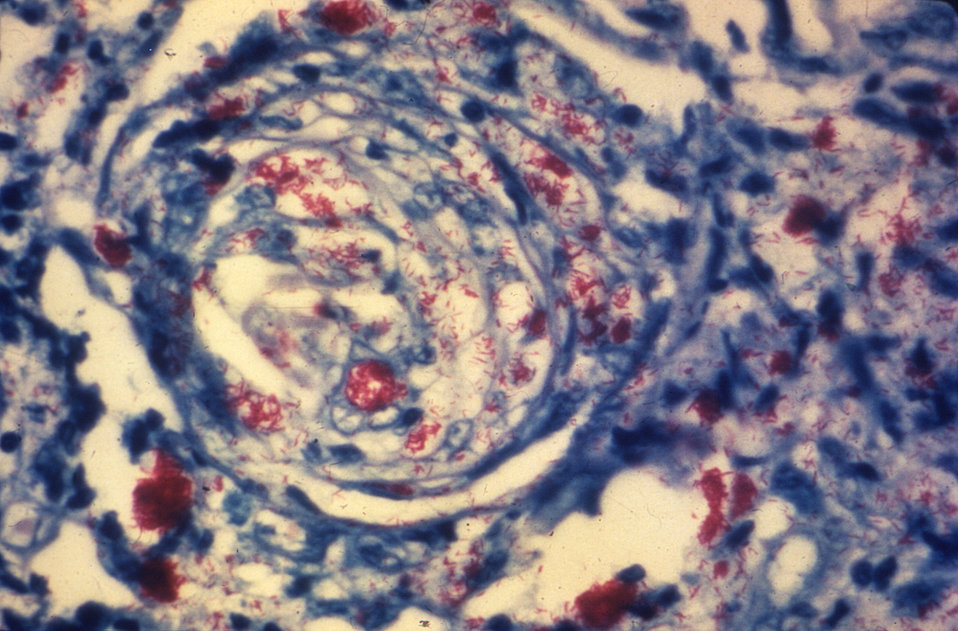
This photomicrograph of a skin tissue sample from a patient with leprosy revealed a cutaneous nerve, which had been invaded by numerous Mycobacterium leprae bacteria.